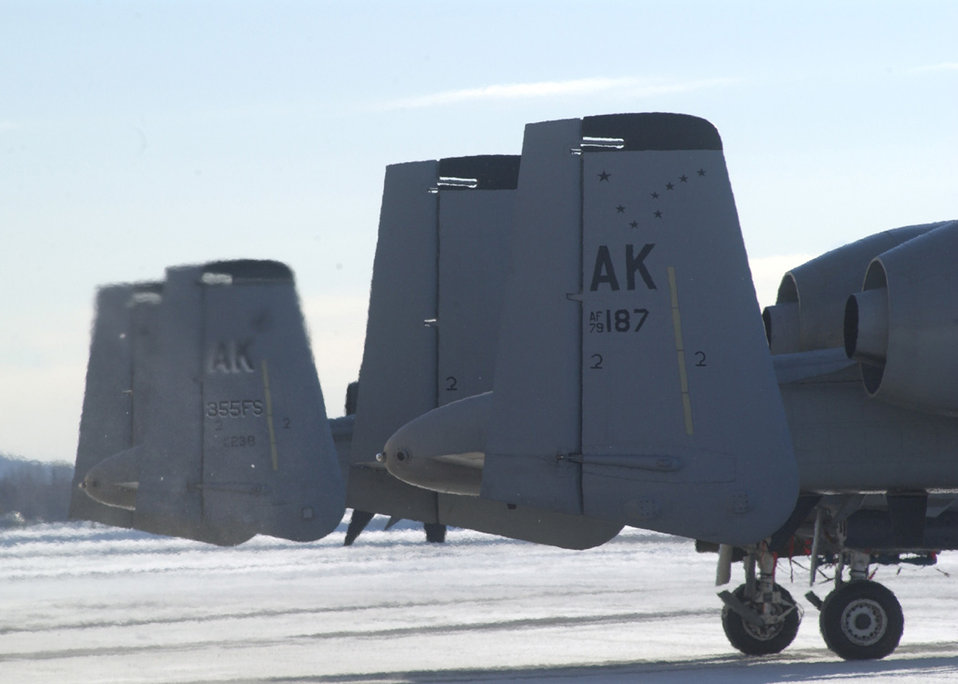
'Thunder' in the sky

EIELSON AIR FORCE BASE, Alaska -- Two A-10 Thunderbolt IIs from the 355th Fighter Squadron prepare to take off from the flightline here March 6. The 355th FS's mission is to rapidly deploy Thunderbolts and support people to any location at a moment's notice. Operations can include close-air support, forward-air control, air interdiction and combat search-and-rescue sorties.